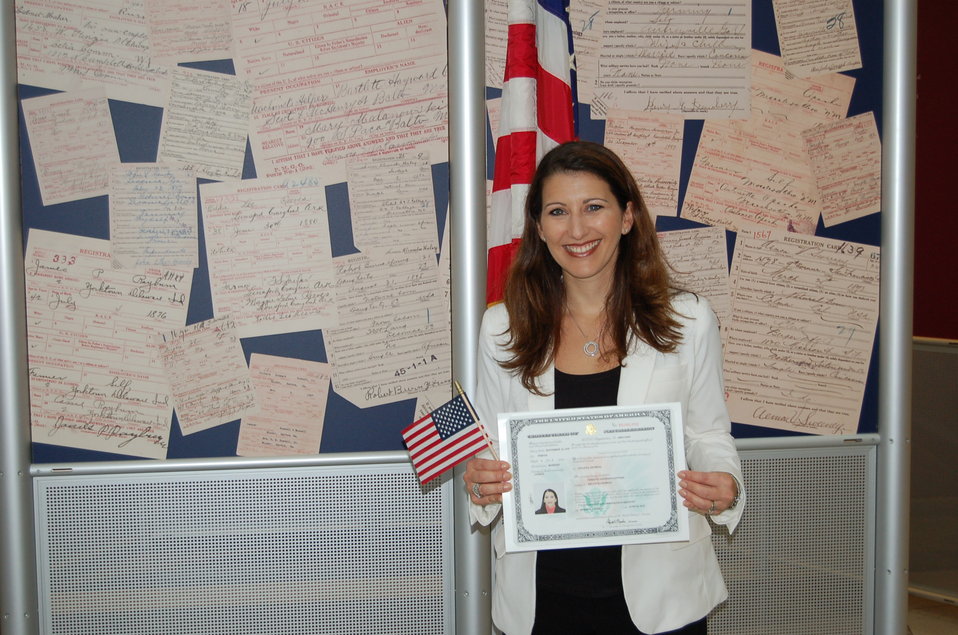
New Citizens